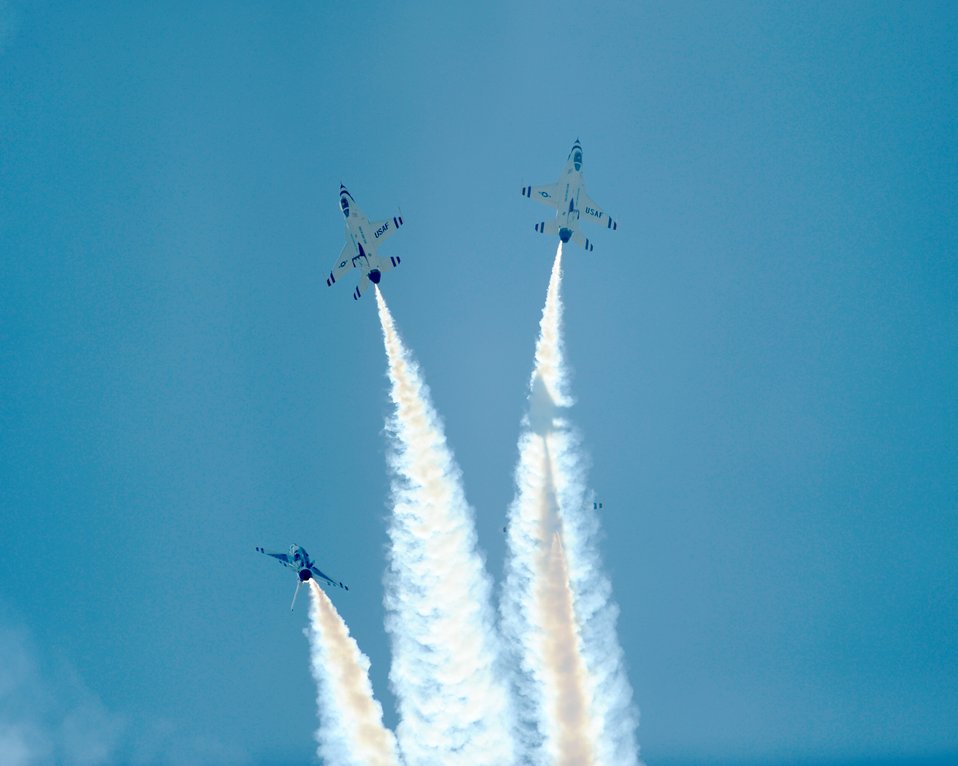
Bursting in air

The Air Force Air Demonstration Squadron